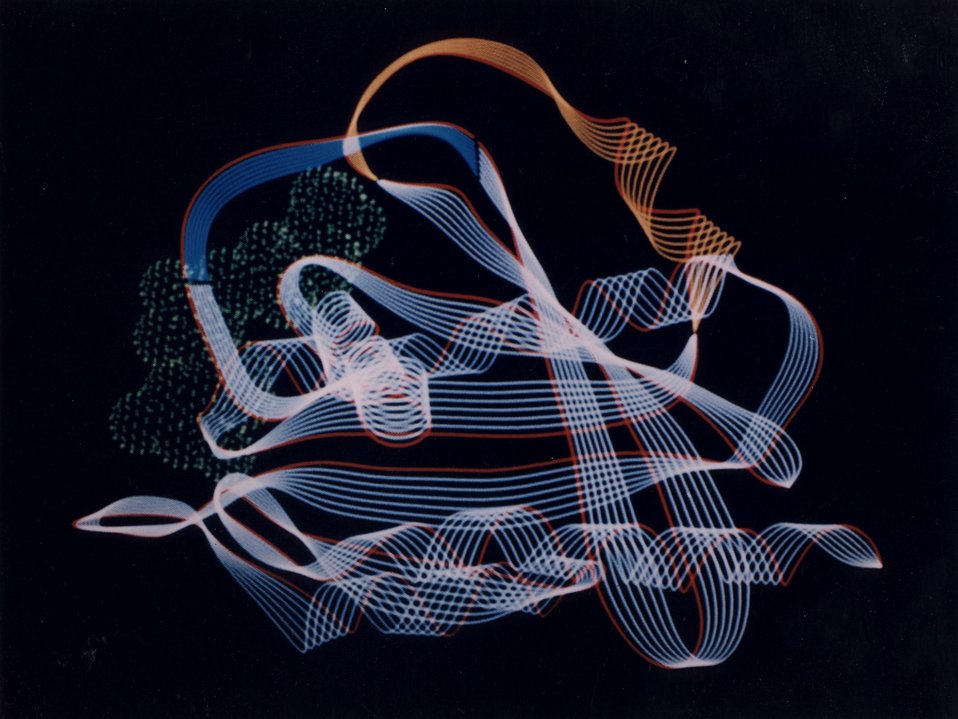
Normal Protein of Oncoprotein> This computer-generated image shows the structural backbone of the normal rash protein, as determined by x-ray diffraction studies.